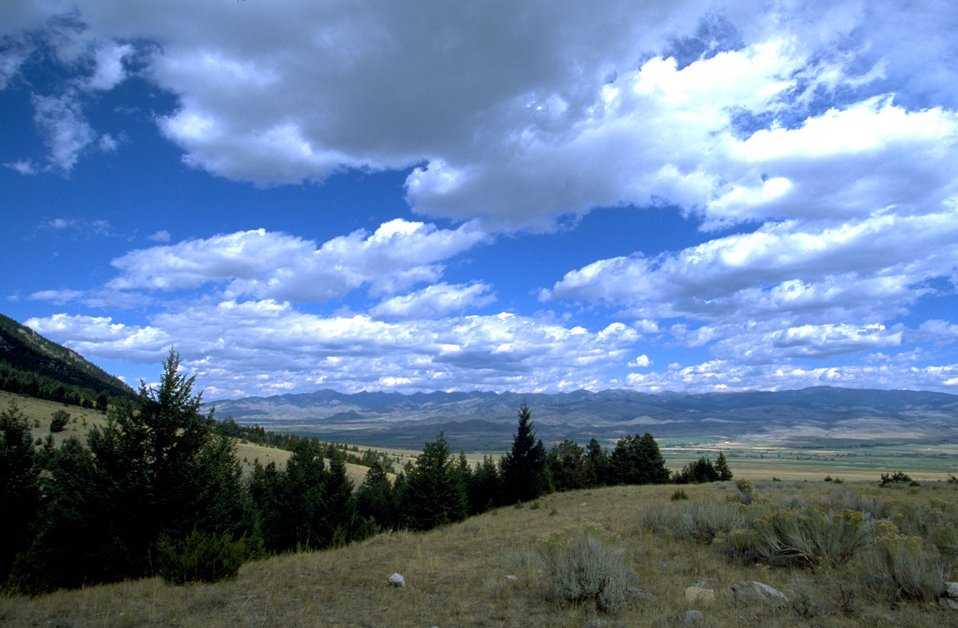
Cloud formations over the Axolotl Lake area